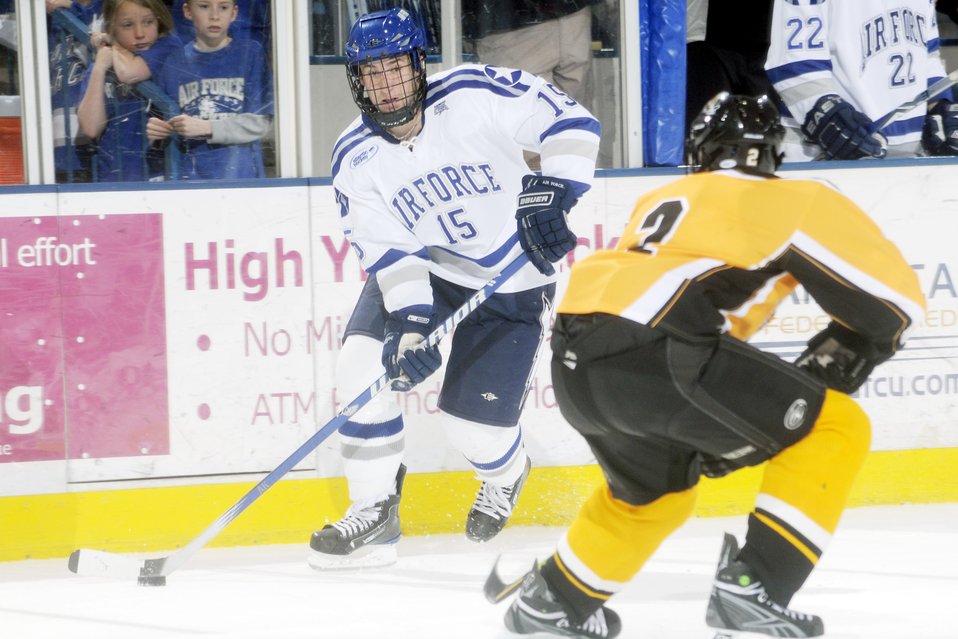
Falcons sweep hockey series

U.S. Air Force Academy junior forward Sean Bertsch tries to move the puck up the ice past opponent Luciano Primiani during the second period of the Falcon's game against American International College at the Cadet Ice Arena Dec. 5, 2009. Air Force defeated AIC 6-2, also sweeping the two-game series with a 5-3 win Dec. 4.